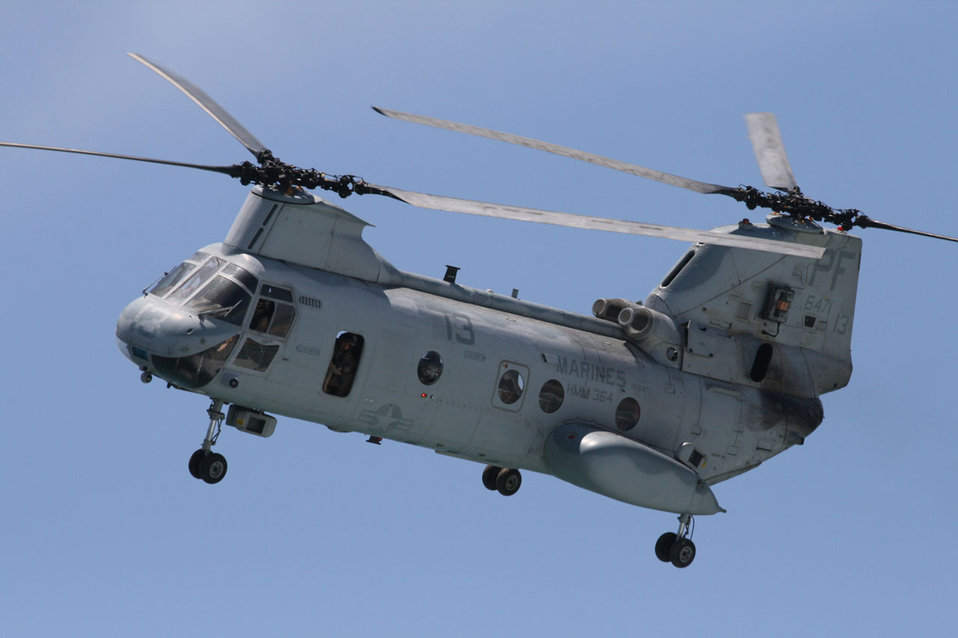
Ch-46 sea knight helicopter

U.s. marines helicopter as it swoops over huntington beach pier.